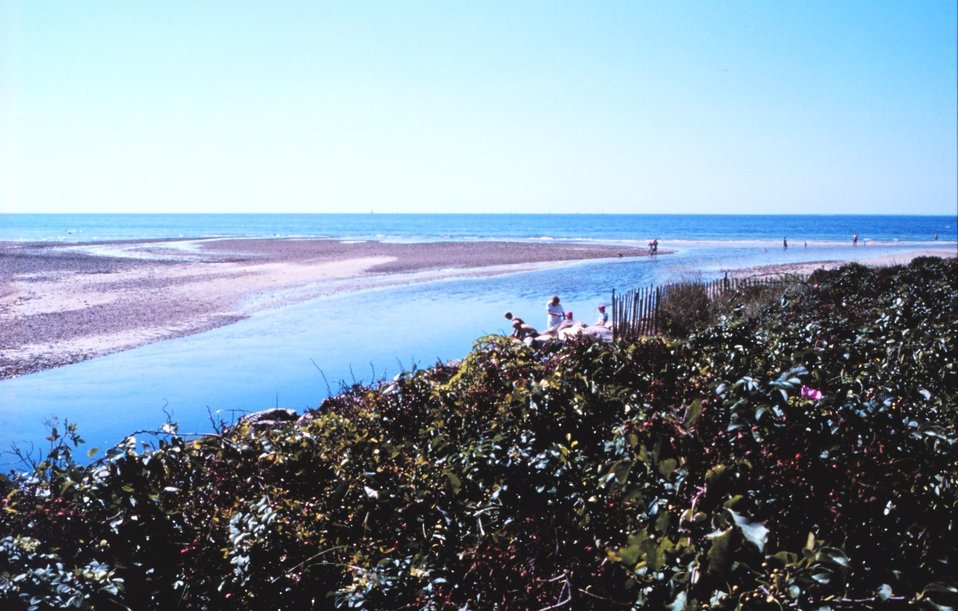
Woodneck Beach - Buzzards Bay, Falmouth